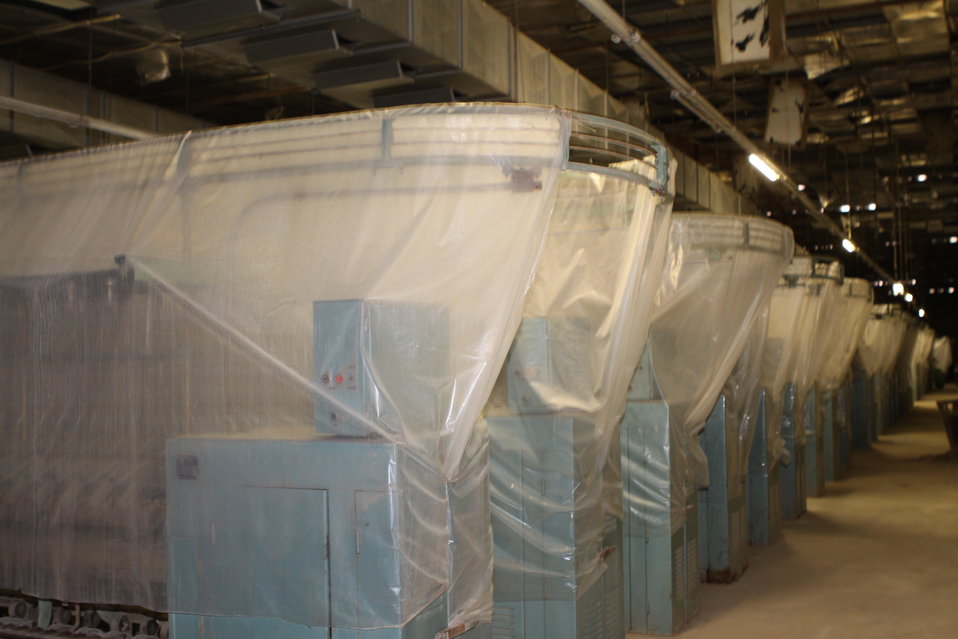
100525 Hirat Textile Company 727